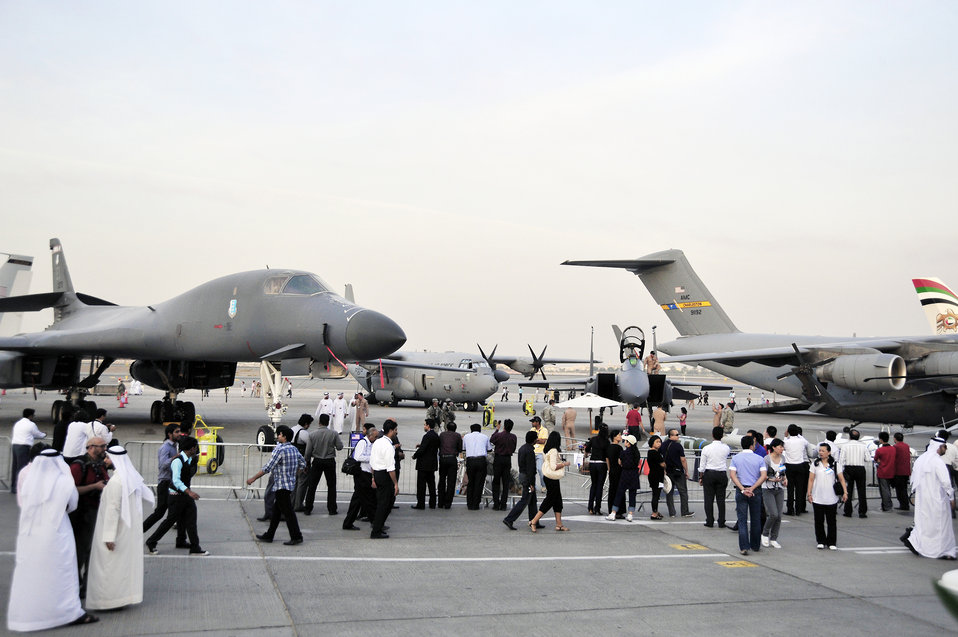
Dubai Air Show

Crowds gather at Department of Defense static display aircraft Nov. 15, 2009 during the Dubai Air Show in the United Arab Emirates. The air show was held at the Dubai International Airport Expo and featured aircraft such as the B-1B Lancer, C-17 Globemaster III, F-15E Strike Eagle and the C-130J Hercules.